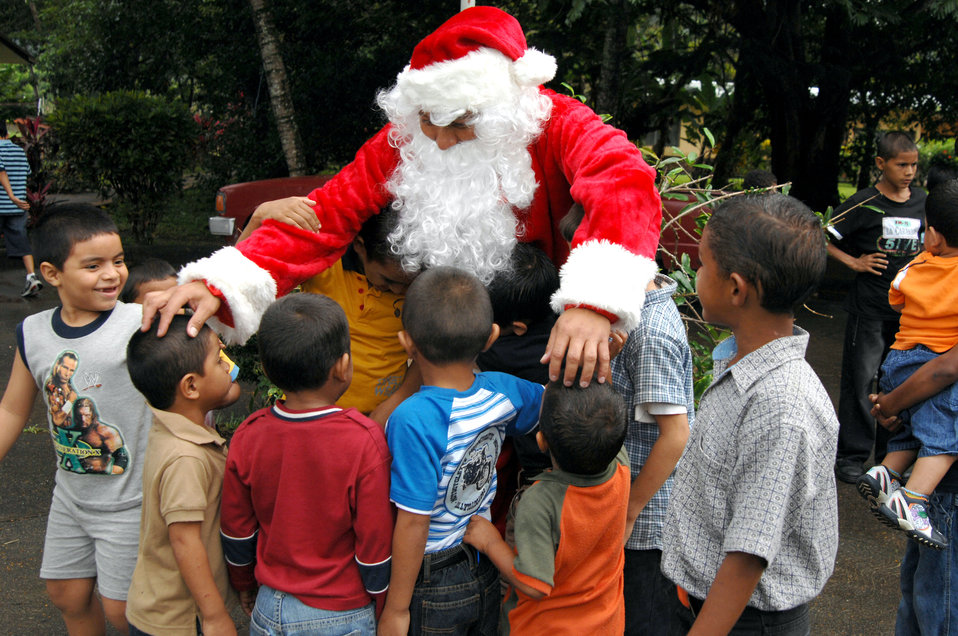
Bringing joy to some kids

Tech. Sgt. Norman Padilla Cruz dresses up like Santa Claus Dec. 13 to greet the children at Aldea Infantil S.O.S Orphanage in La Ceiba, Honduras. Operation Christmas Wish is an annual trip made by 1st Special Operations Wing Airmen, delivering Christmas packages to Honduran orphans.